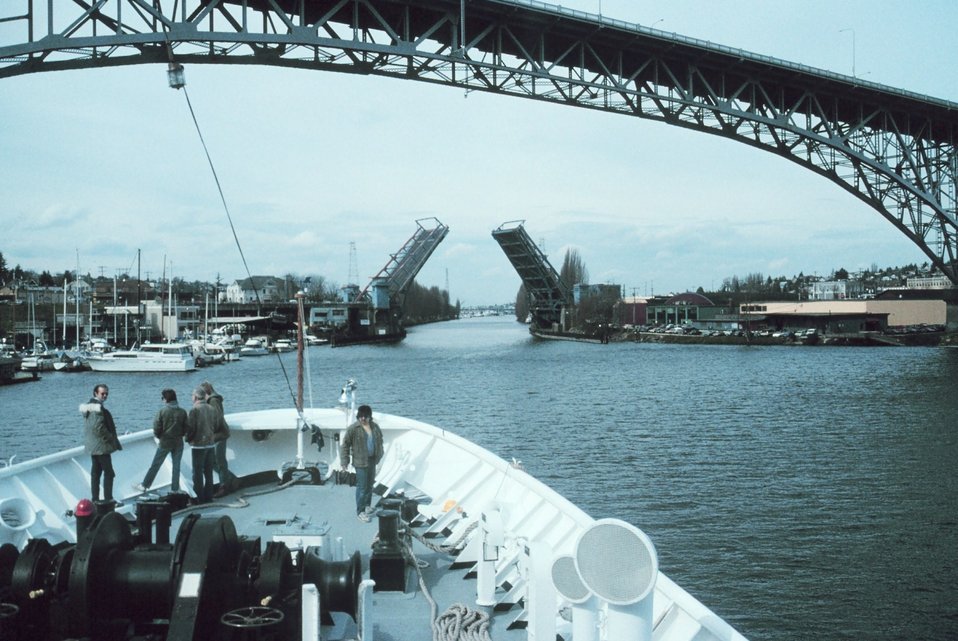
Heading toward Ballard Locks from Lake Union